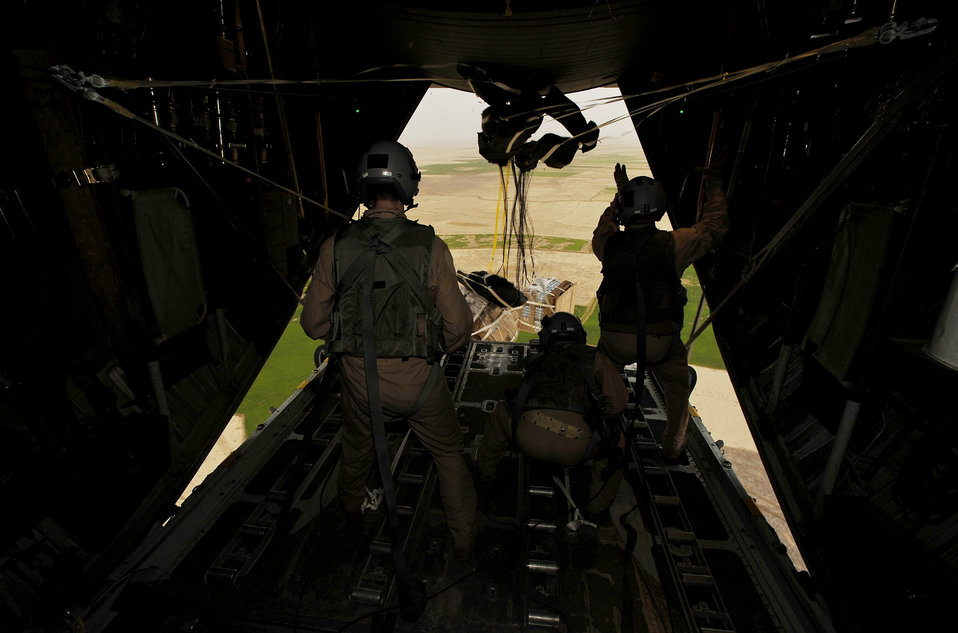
C-130 low-cost, low-altitude combat airdrops now operational

Loadmasters from the 774th Expeditionary Airlift Squadron release four low-cost, low-altitude resupply bundles from a C-130 Hercules Feb. 6, 2010, in Afghanistan.